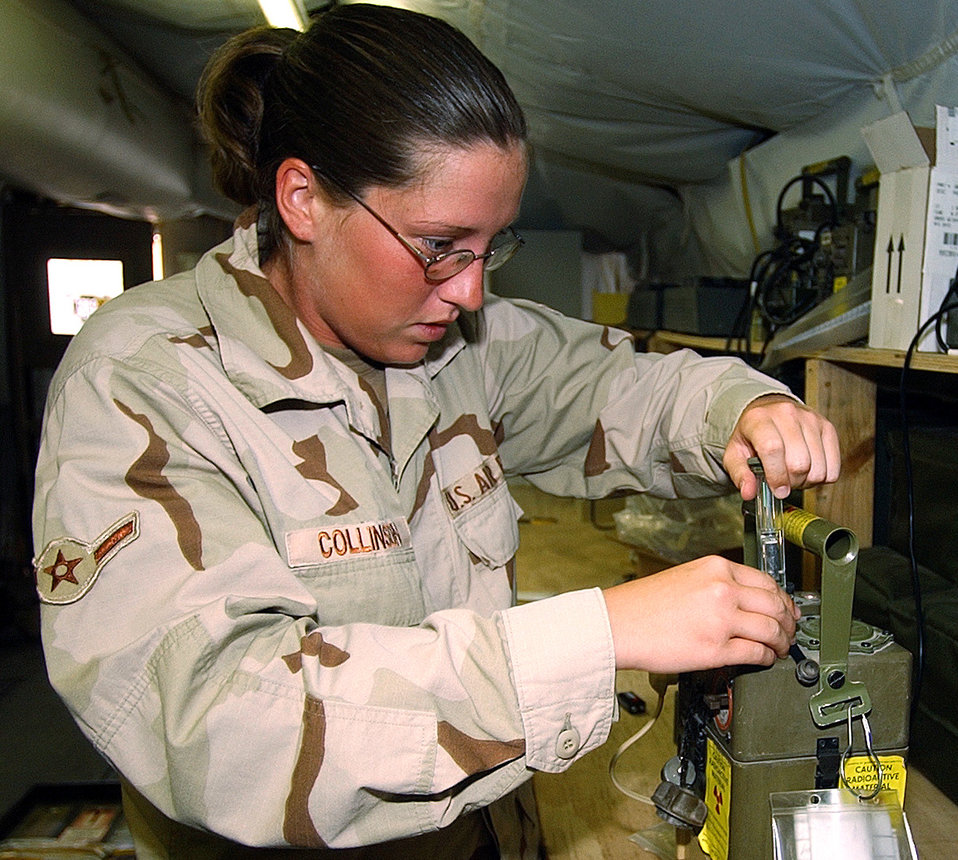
Collinson

OPERATION IRAQI FREEDOM -- Airman Misty Collinson, a readiness apprentice assigned to the 321st Expeditionary Civil Engineering Squadron, tests the airflow on a M8A1 Chemical Detector at a forward-deployed location in support of Operation Iraqi Freedom. The M8A1 detects nerve agents. Collinson is deployed from Royal Air Force Lakenheath, England.